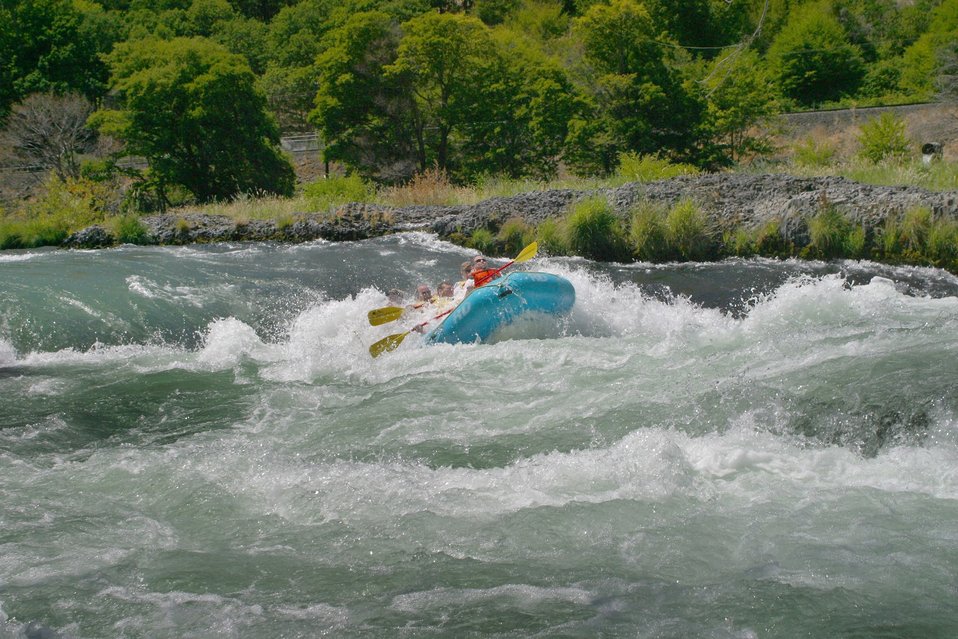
Oak Springs is a Class IV Rapids. The left channel has shallow rocks, large standing waves, turbulent currents and a large hole during high flows. The right channel has a large hole, shallow rocks, and turbulent currents. 7/26/03 Pelton Dam 3600 cfs: Moody Rapids 4300 cfs.